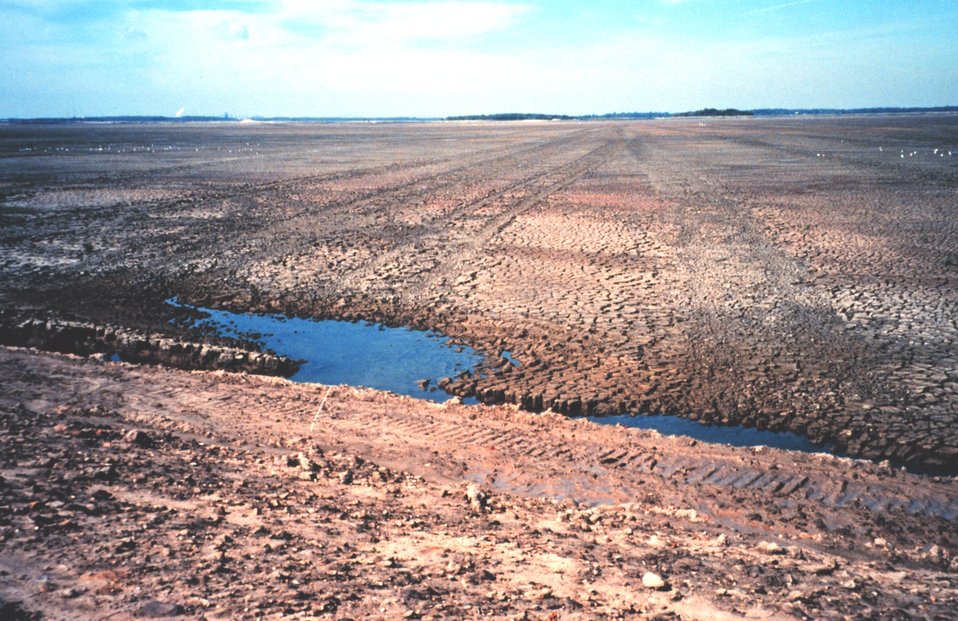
Hart-Miller Island, once two islands that nearly eroded into extinction, are now one. They are being regenerated and enlarged with dredge spoils from Baltimore Harbor.